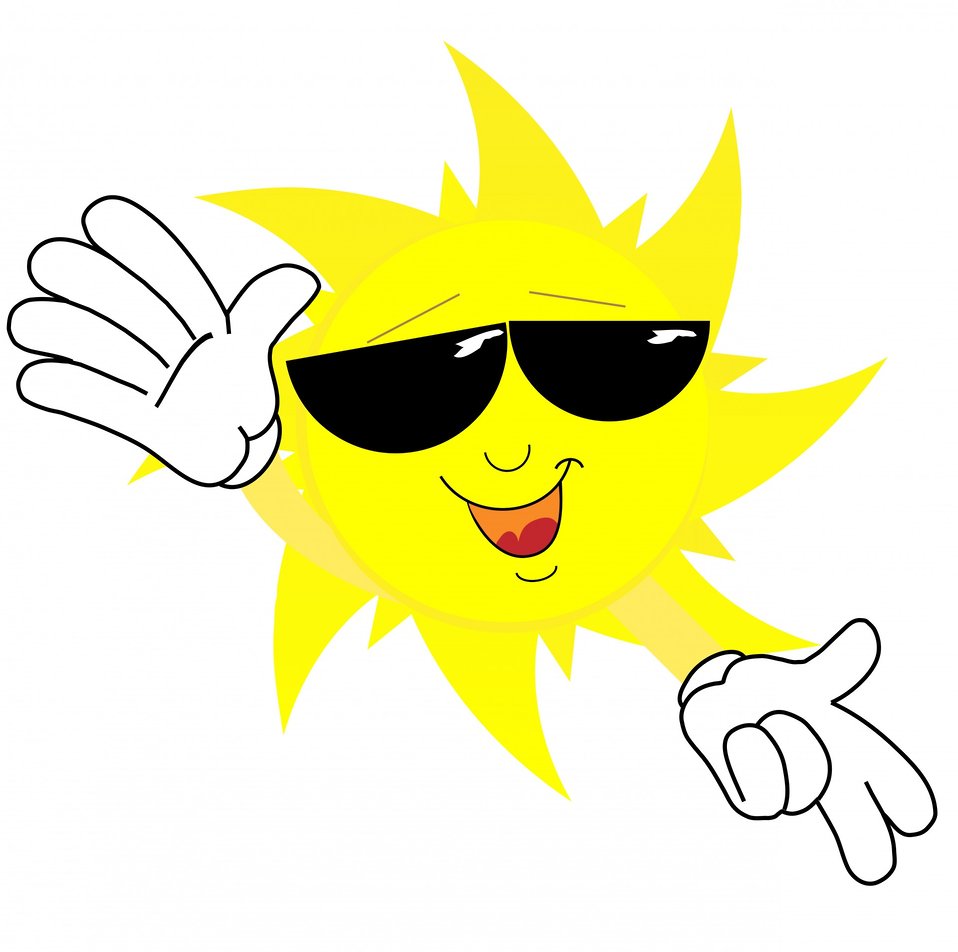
Happy sun face cartoon

Happy sun face in sunglasses and big hands cartoon clipart for scrapbooking.